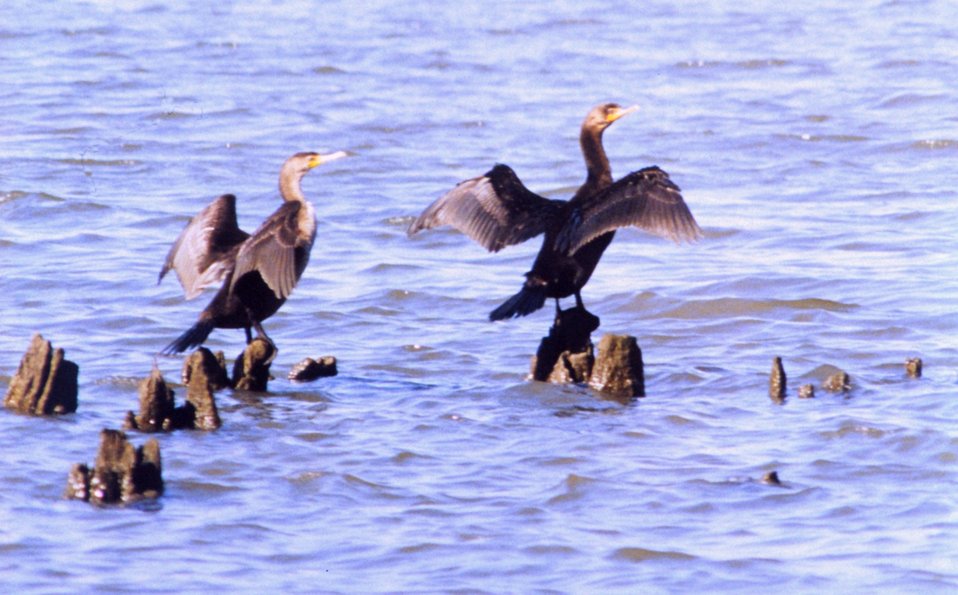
Cormorants drying their wings on old steamboat landing piles.